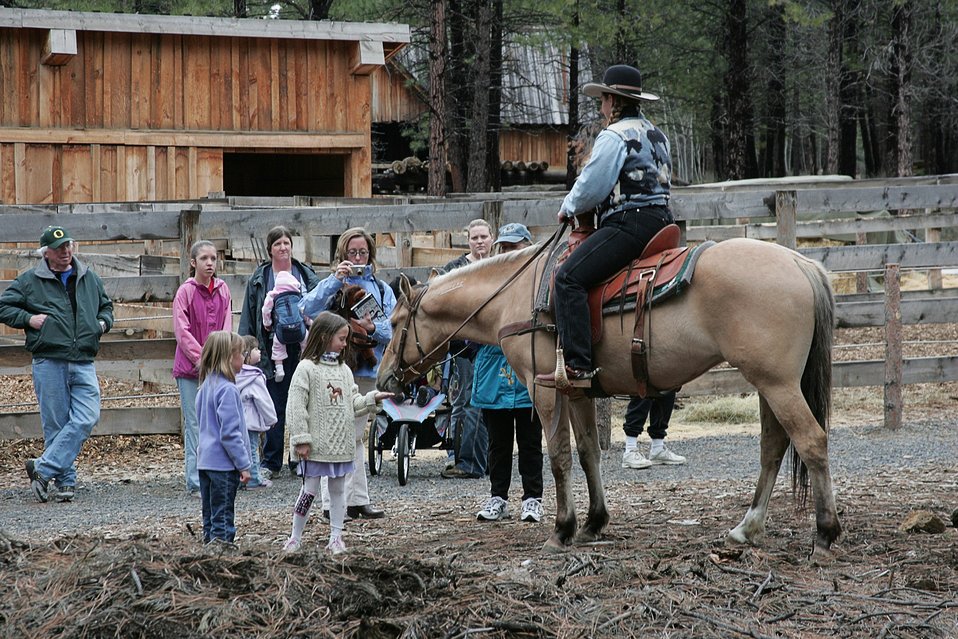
Horse Trainer, Kitty Lauman talks with High Desert Museum visitors about wild horses and the training process.